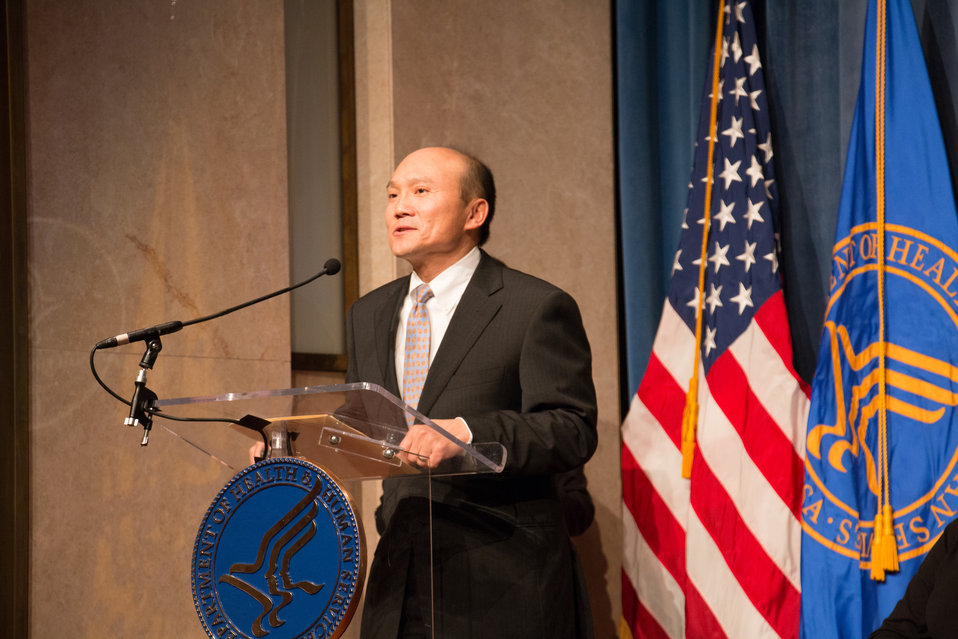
VHAP Launch (257 of 511)